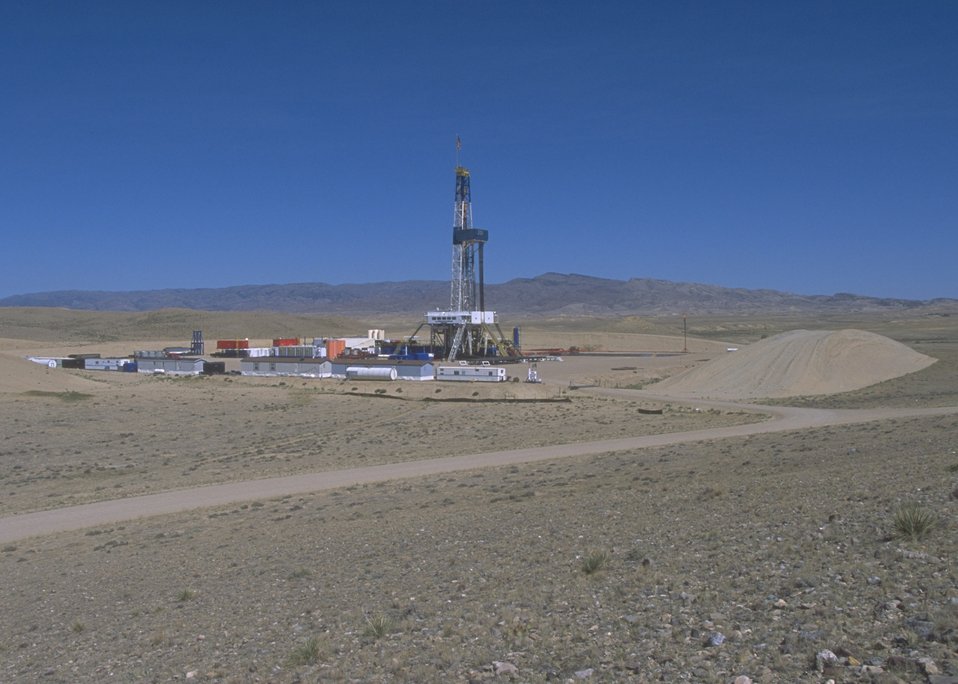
Burlington Northern deep well rig, Casper Field Office.